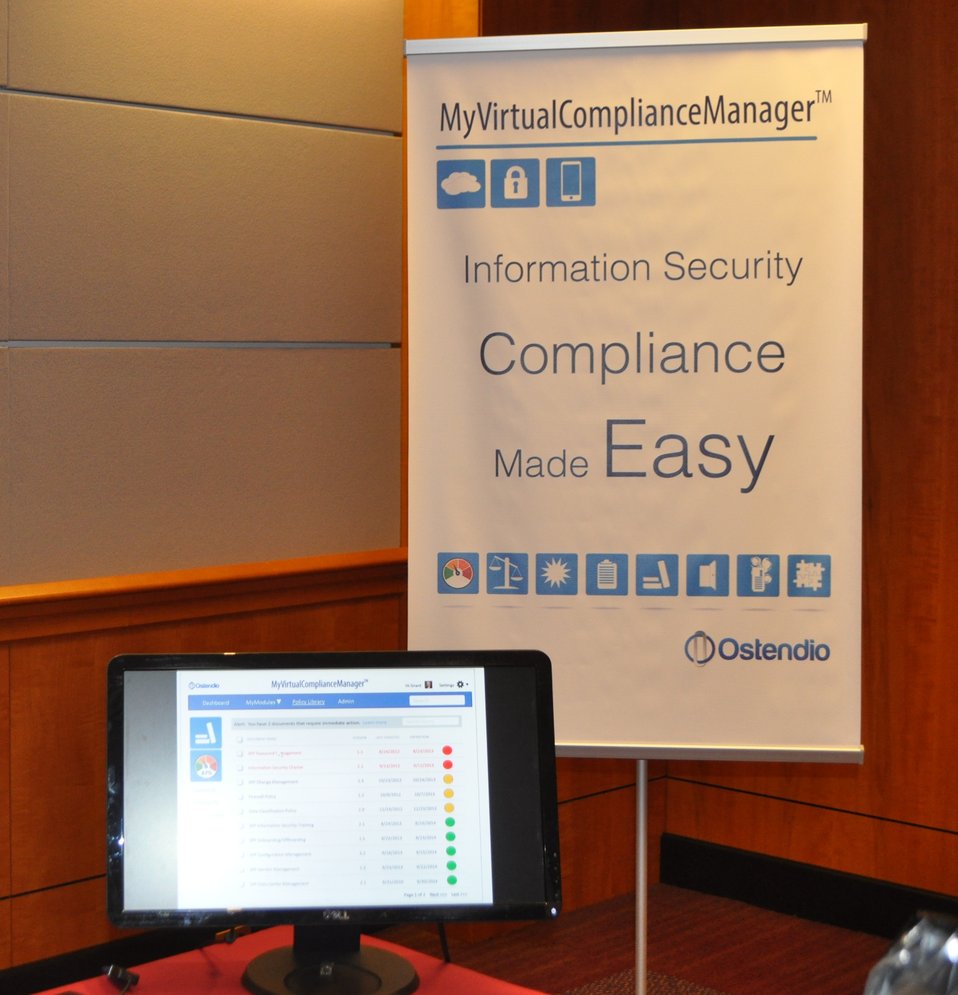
12.6.13 mHealth Innovation Expo

FCC mHealth Innovation Expo.